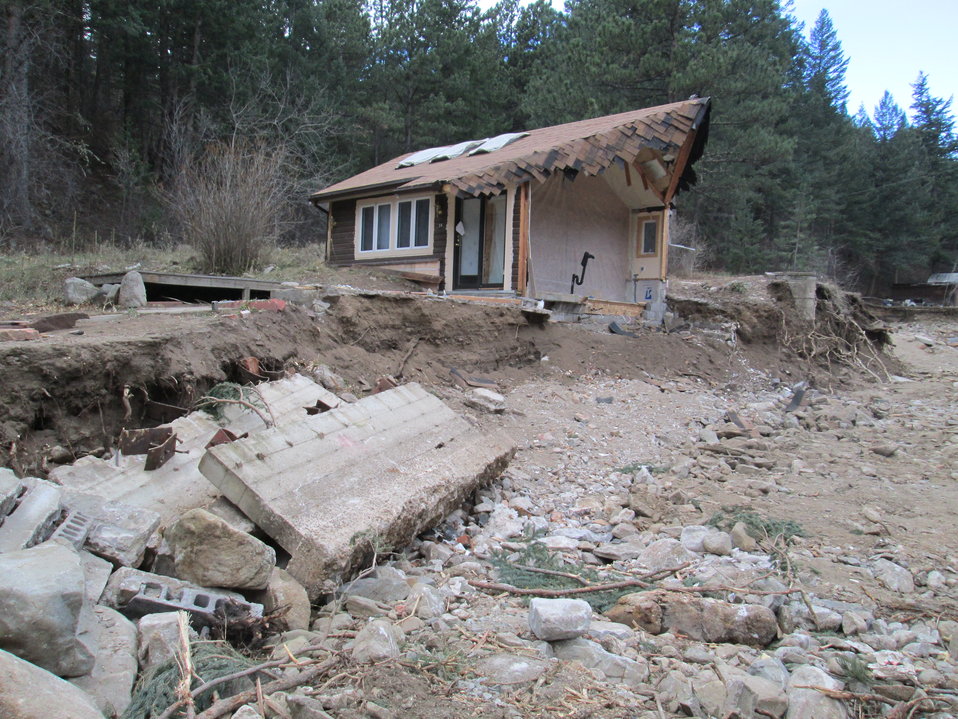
Jamestown, CO, November 19, 2013

Many people lost their homes, cars, and belongings. This Jamestown home was one of many damaged by the flooding.